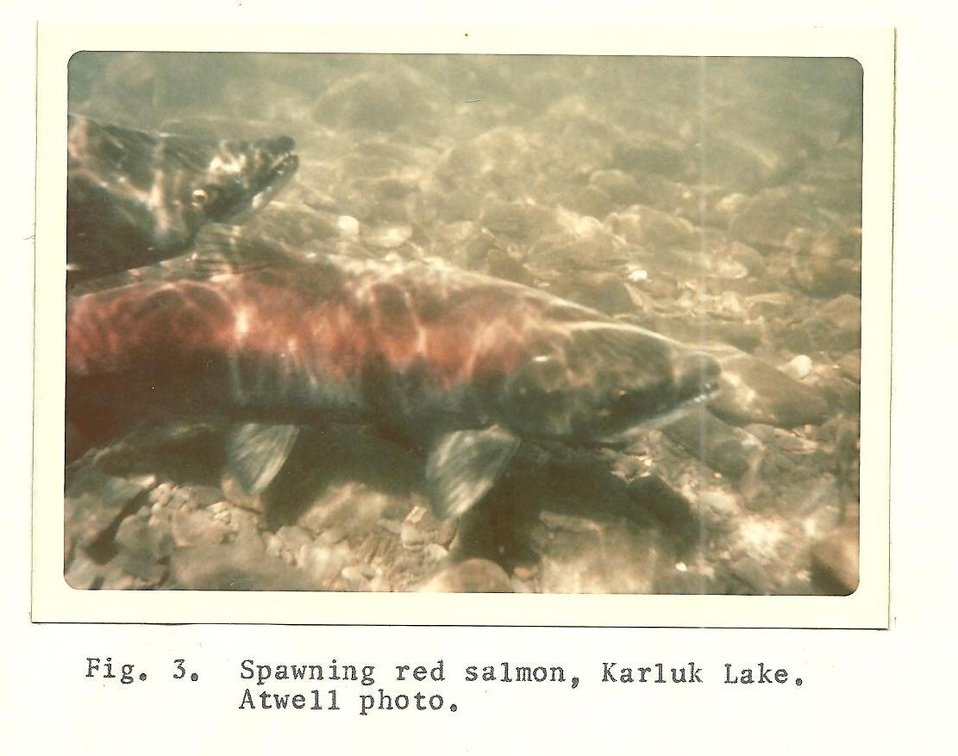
(1974) Spawning Red Salmon

Credit: USFWS

Source and Contact: Kodiak National Wildlife Refuge